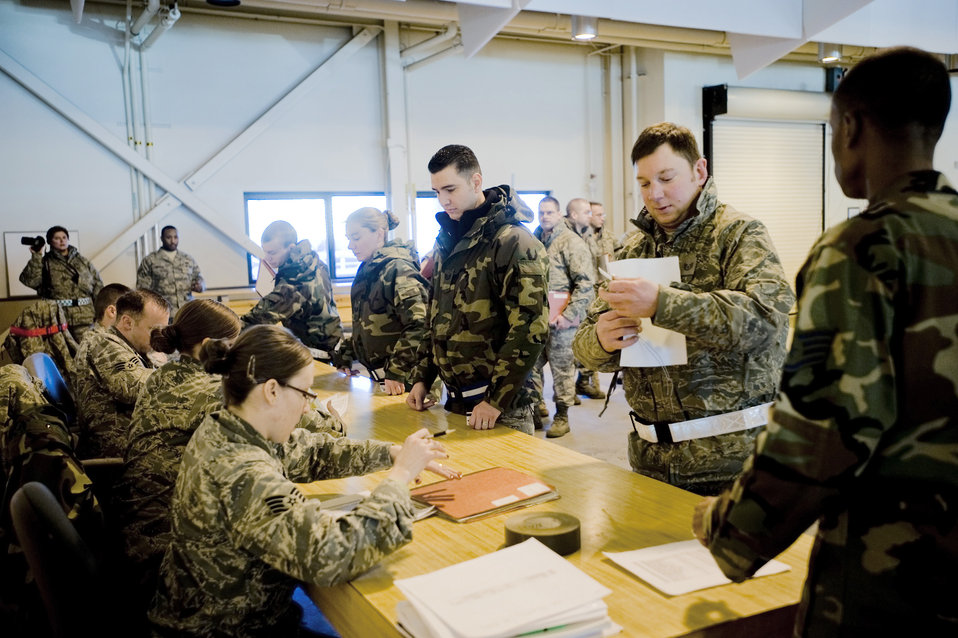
Elmendorf officials prepare for possible volcano eruption

Airmen from 703rd Aircraft Maintance Squadron process throught the deployment line before heading to McChord Air Force Base, Wash., Feb. 1 at Elmendorf AFB, Alaska. Five C-17 Globemaster IIIs and around 130 operations and maintenance personnel are heading to McChord AFB as a precautionary measure due to increased volcanic activity associated with nearby Mount Redoubt.